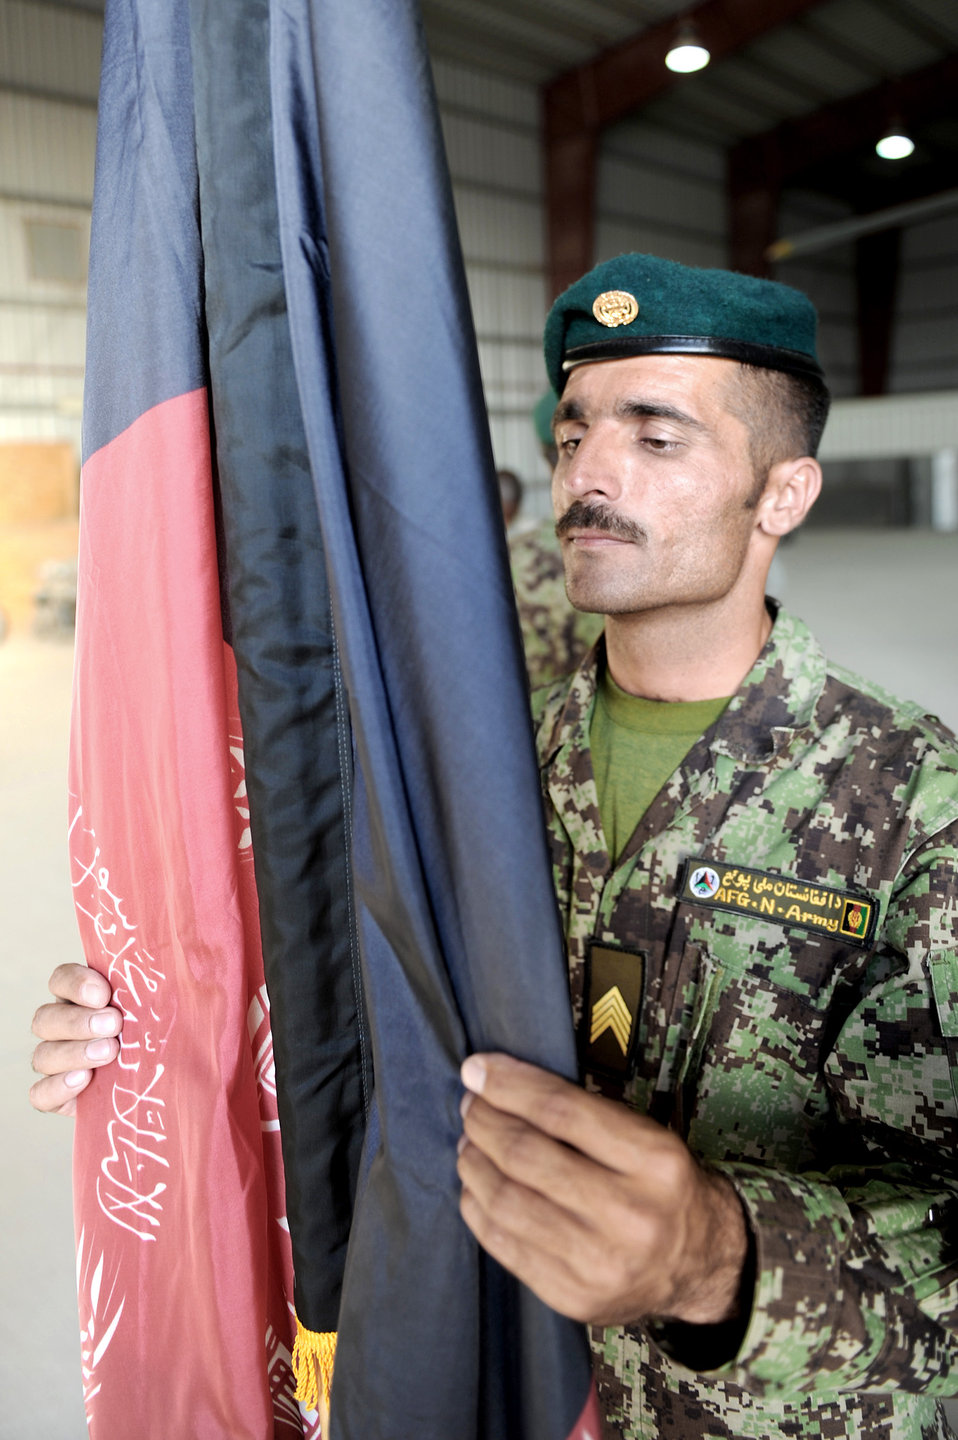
Afghan honor guard

An Afghan airman for the Kandahar Air Wing adjusts the flag during posting of the colors Oct. 3, 2010, at Kandahar Airfield, Afghanistan. The 451st Air Expeditionary Wing Honor Guard members worked with the Afghans to help them prepare their own Honor Guard for a ceremony marking the one year anniversary of the Kandahar Air Wing.